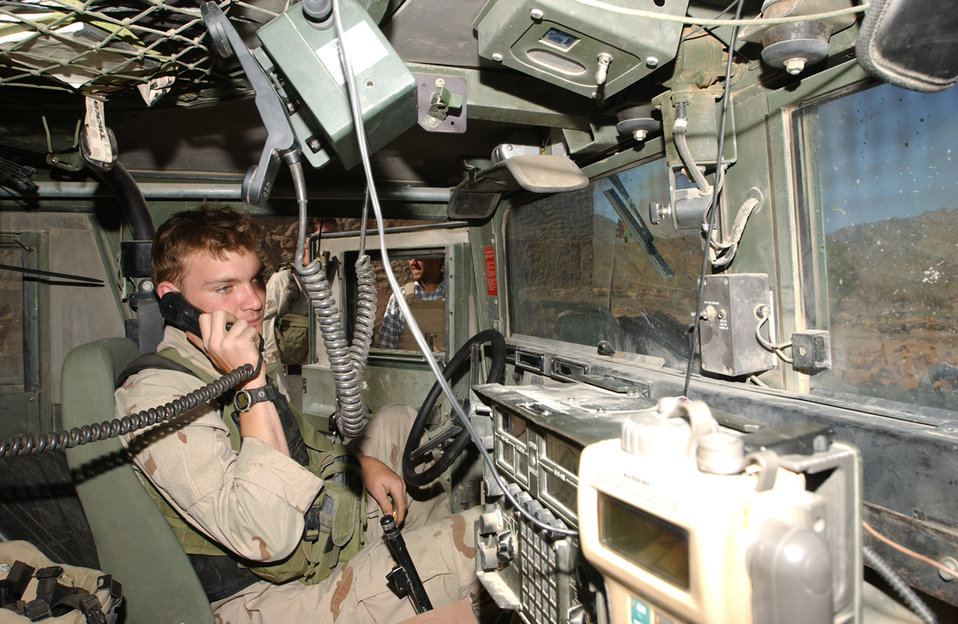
Airmen provide close-air support for patrol in Afghanistan

PAKTIKA PROVINCE, Afghanistan -- Airman 1st Class Chad Williams talks to an A-10 Thunderbolt II pilot to coordinate close-air support. He is a joint terminal attack controller attached with the Army's 508th Infantry Regiment and is deployed from the 1st Air Support Operations Squadron's Detachment 1 in Freiburg, Germany.